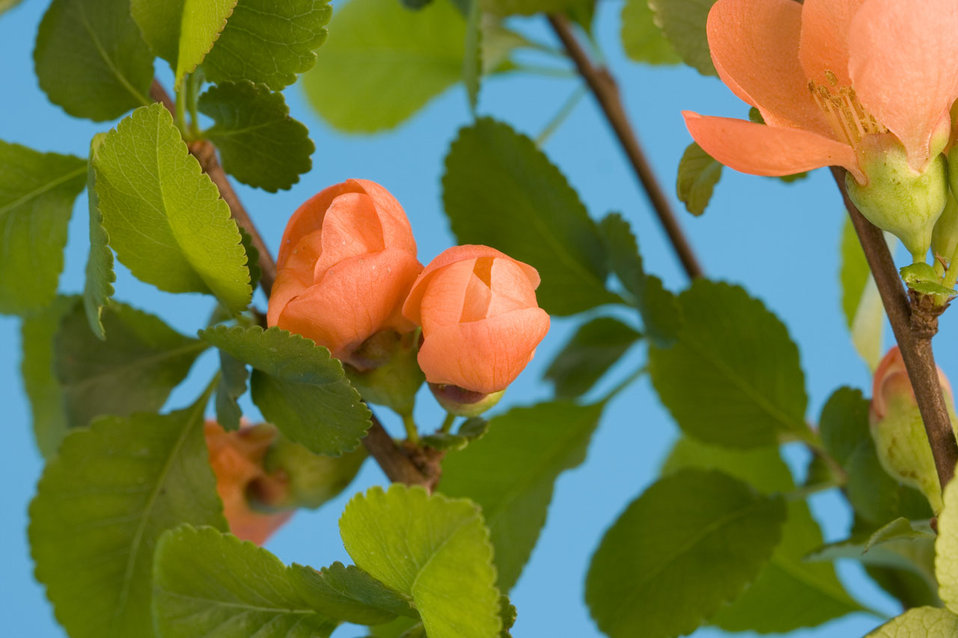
Flower buds

A couple of flower buds.